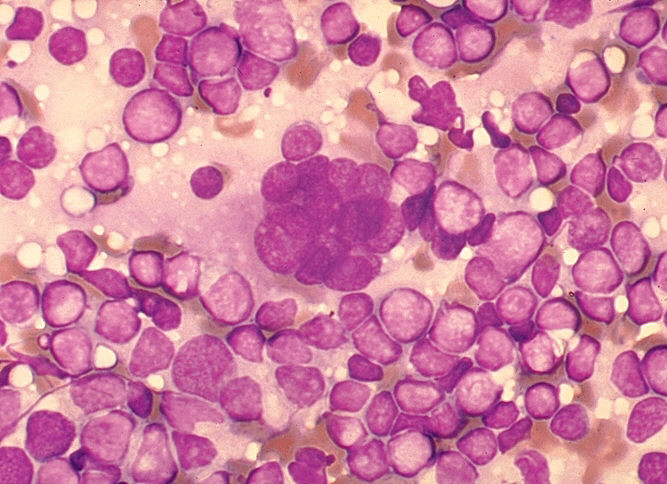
Multinucleated cell in touch preparation from cut surface of enlarged lymph node from patient with HIV-1 infection.